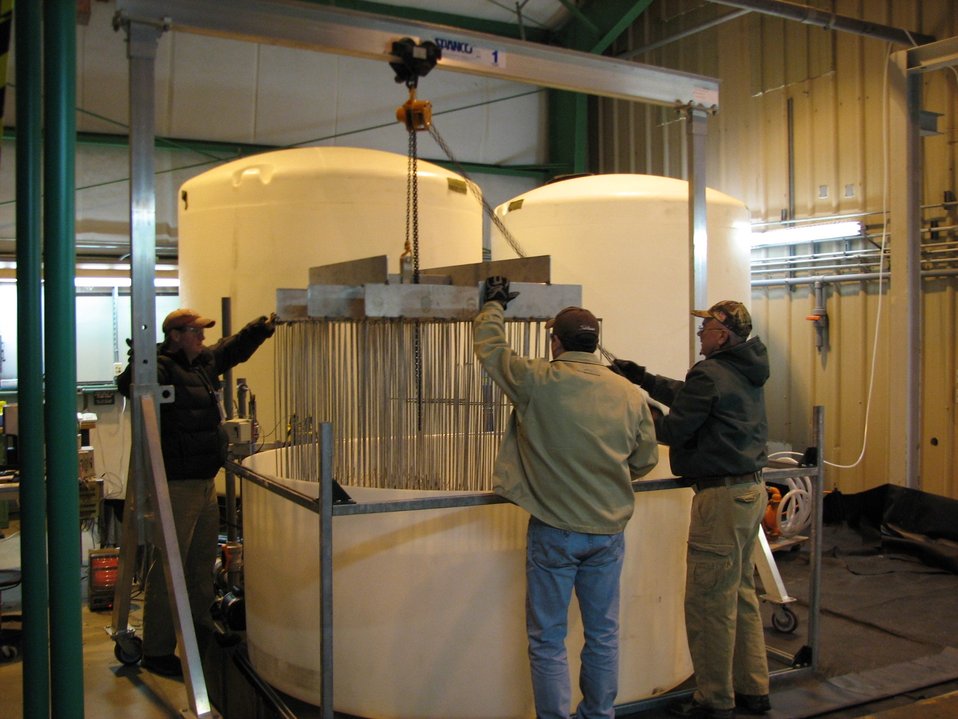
Mixer Pump

Pictured here is a mixer pump designed to accelerate the processing of radioactive salt waste at the Savannah River Site.